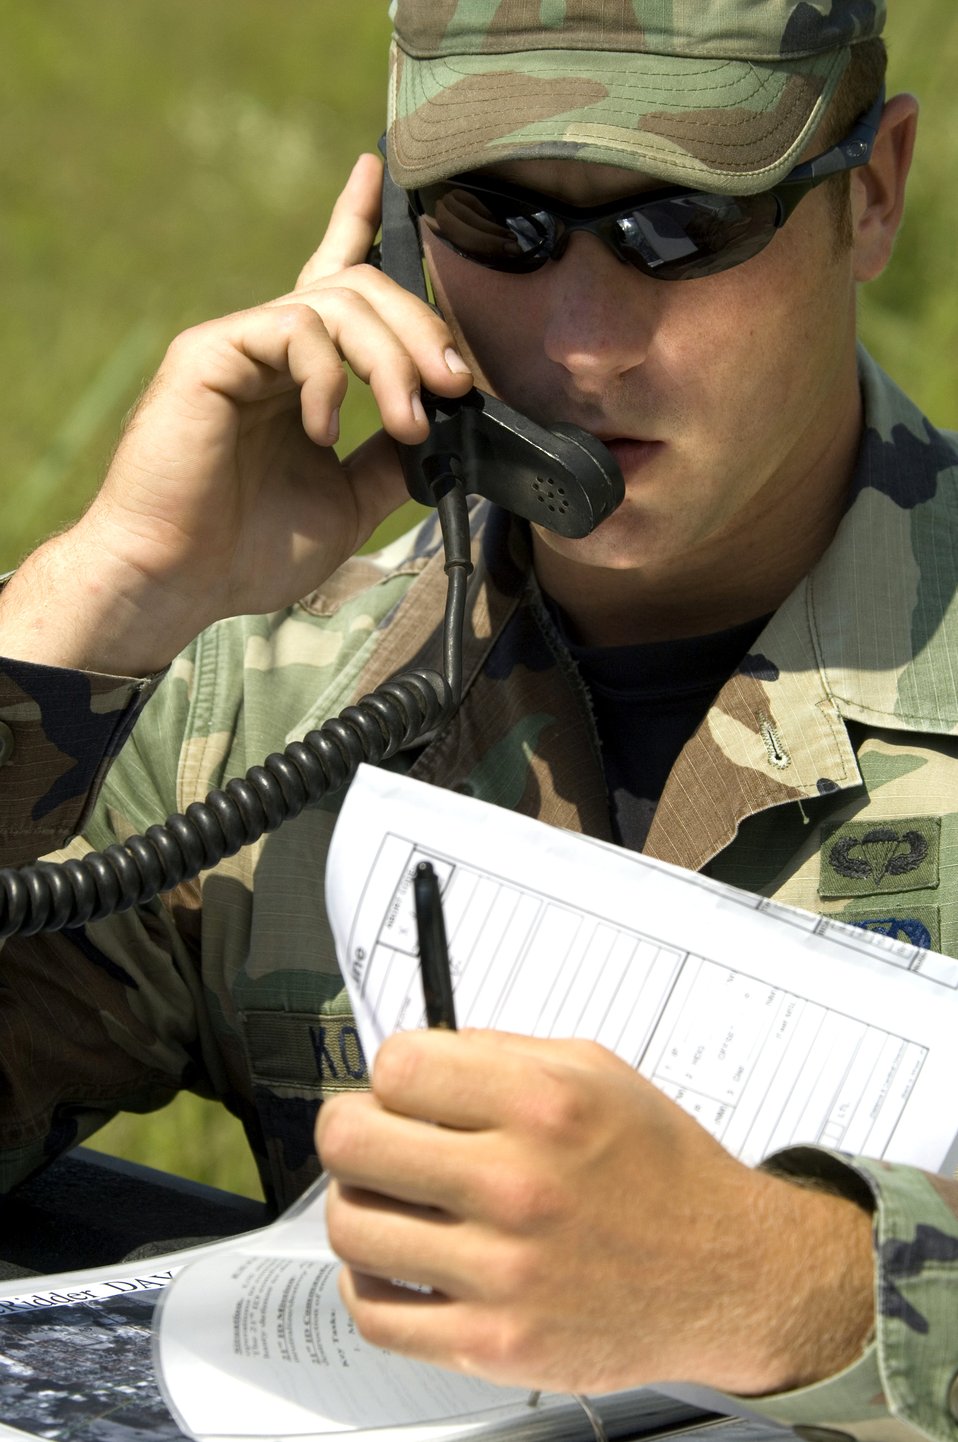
Airmen call in 'air strikes' on Louisiana communities

Staff Sgt Daniel Kovarik, a joint terminal air controller assigned to Detachment 1, 458th Combat Training Squadron, Fort Polk, La., calls in targeting coordinates of a suspected terrorist hideout to nearby A-10 Thunderbolt IIs during urban combat air support training on May 16, 2006. The training took place in Deridder, La., where the 458th CTS has an agreement to allow flights over the city for more realistic urban conditions.